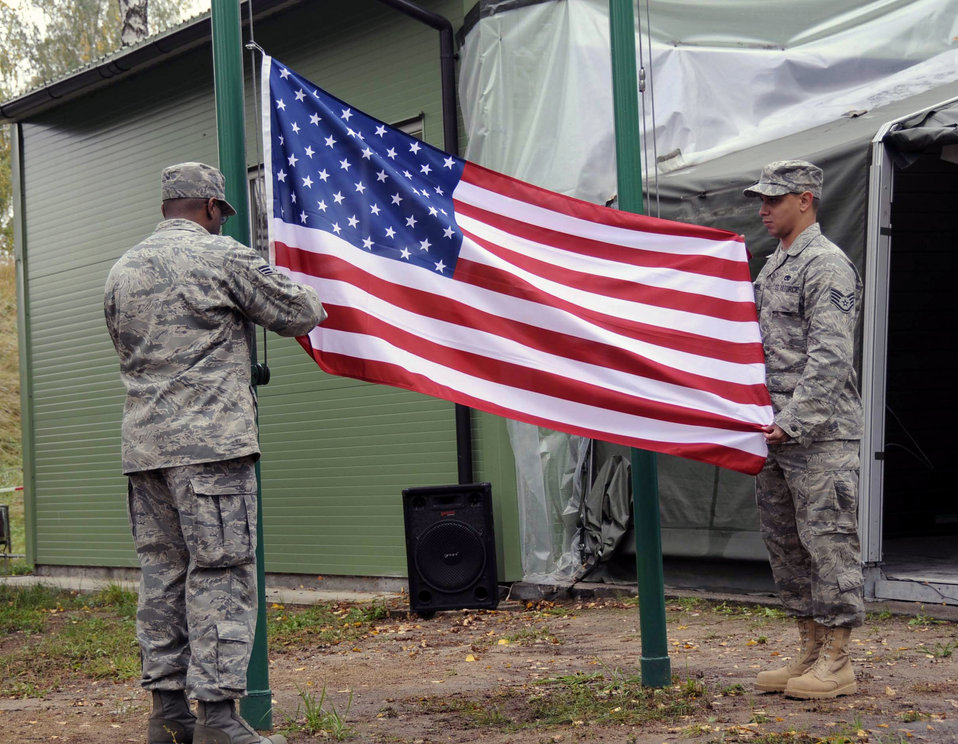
Ceremony marks beginning of U.S. mission in Baltics

Senior Airman Antonio Huguley and Staff Sgt. Raphael Santos-Montanez raise the U.S. flag over the Quick Reaction Facility as part of the change-over ceremony marking the first day of the U.S. rotation performing the NATO Baltic air policing mission. Airman Huguley is assigned to the 493d Expeditionary Fighter Squadron PERSCO section. Sergeant Santos-Montanez is assigned to the 493d EFS Quality Assurance section.